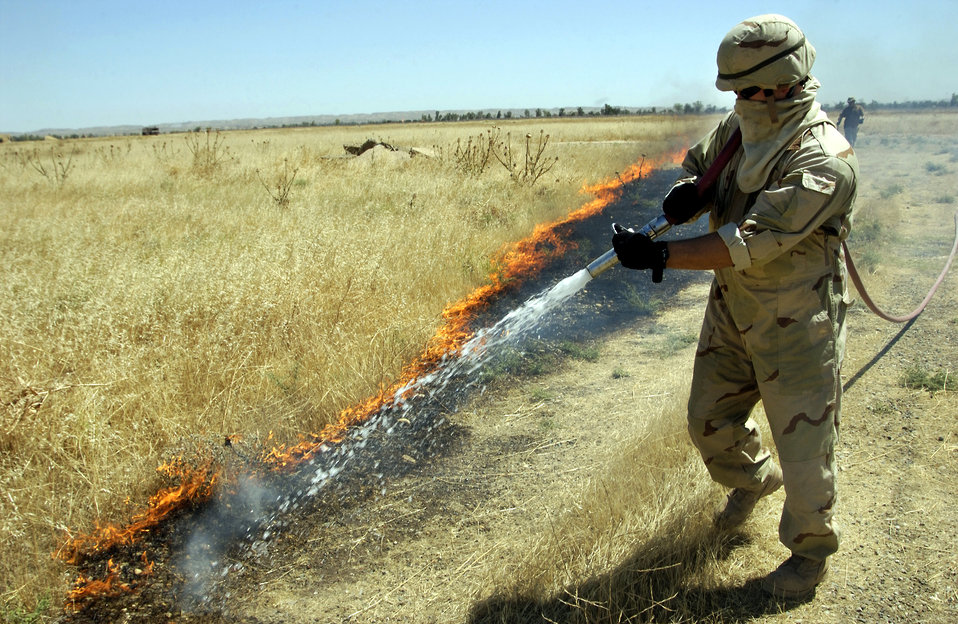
Burn baby burn

KIRKUK AIR BASE, Iraq -- Staff Sgt. Jerry Carter spays water to prevent the spread of fire during a controlled burn here June 6. Controlled burning of dry grass and weeds helps prevent accidental fires during the hot Iraqi summer and will germinate seeds to grow in the spring. Sergeant Carter is a firefighter with the 506th Air Expediton Group fire department.